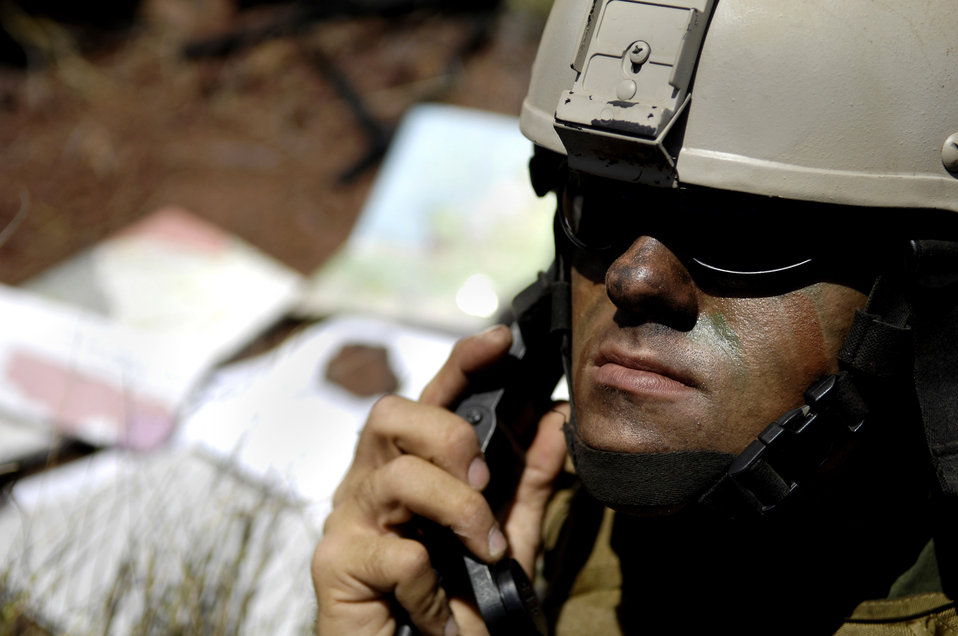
B-2s train with JTACs, drop bombs on target

Airman 1st Class Robert Gaines calls in an air strike Oct. 23 during the Koa Lightning exercise at the Pohakuloa Training Area, Hawaii. Airman Gaines is a tactical air controller from the 25th Air Support Operations Squadron, Wheeler Army Air Field, Hawaii.